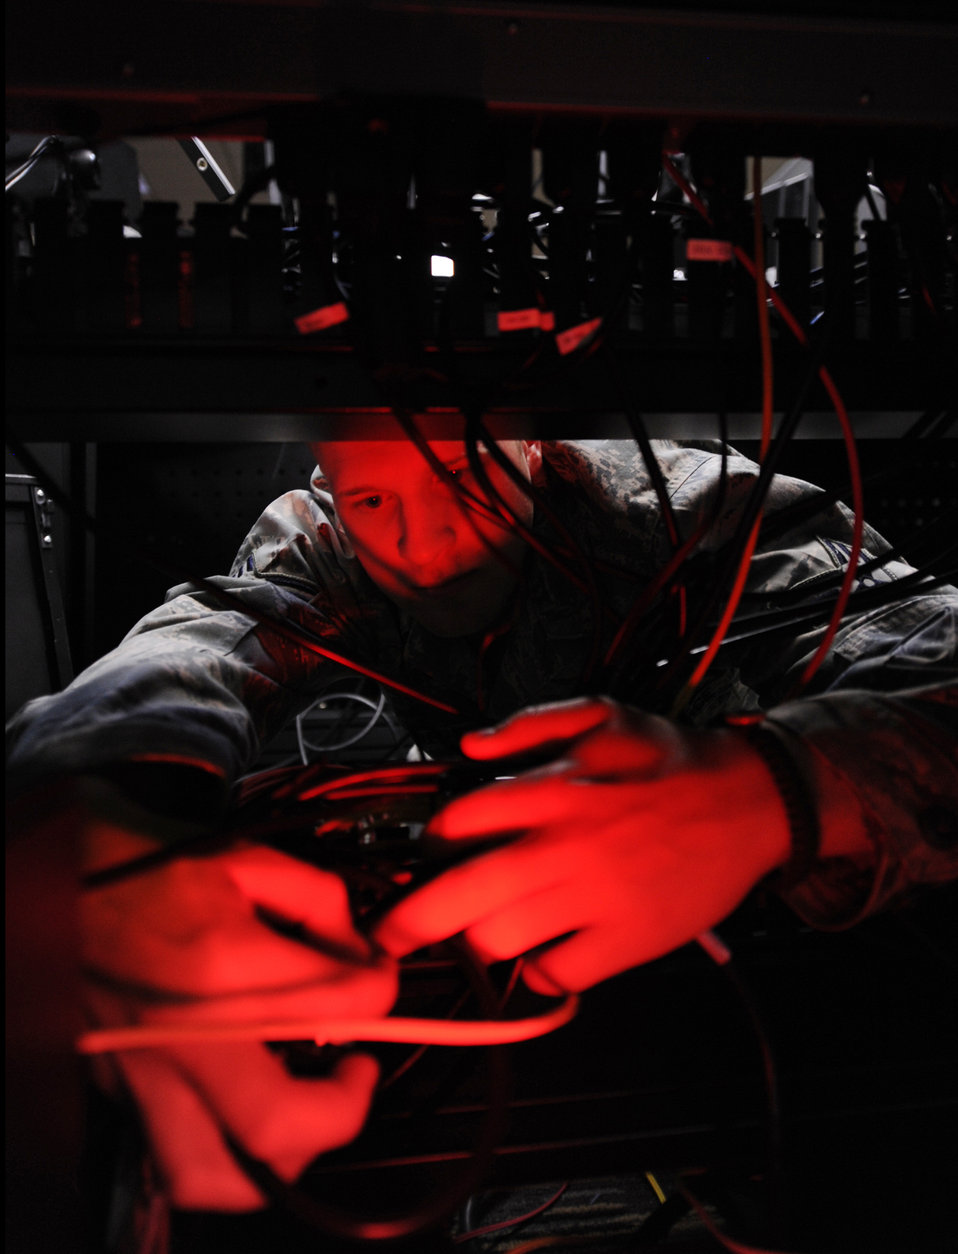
Making sure everything is just so

Senior Airman Ryan Albert installs computer systems April 21, 2010, in the new 497th Intelligence, Surveillance and Reconnaissance Group building on Langley Air Force Base, Va. Airman Albert is an electrical power production journeyman with the 10th Intelligence Squadron.